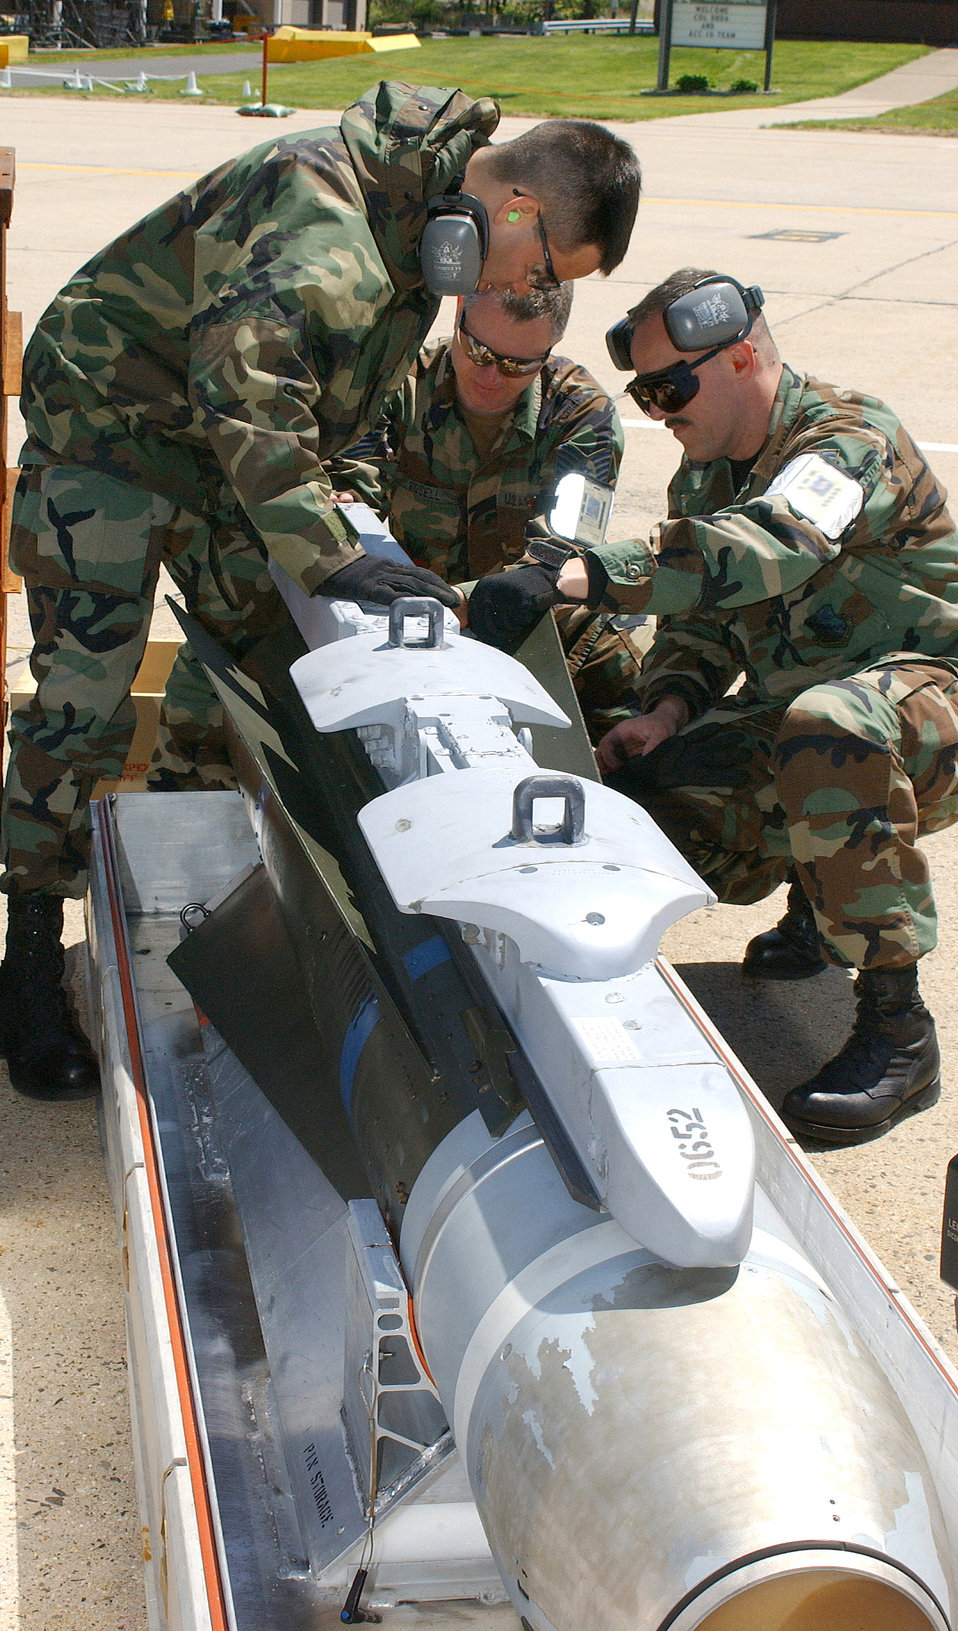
Operation ready

Senior Airman Daniel Bonora (left) and Tech. Sgts. Scott Edsell and Bruce Hart prepare an AGM 65 Maverick missile during the first phase of an operational readiness inspection at Willow Grove Air Reserve Station, Pa., on Saturday, April 29, 2006. The three Airmen are with the Pennsylvania Air National Guard's 111th Maintenance Squadron.